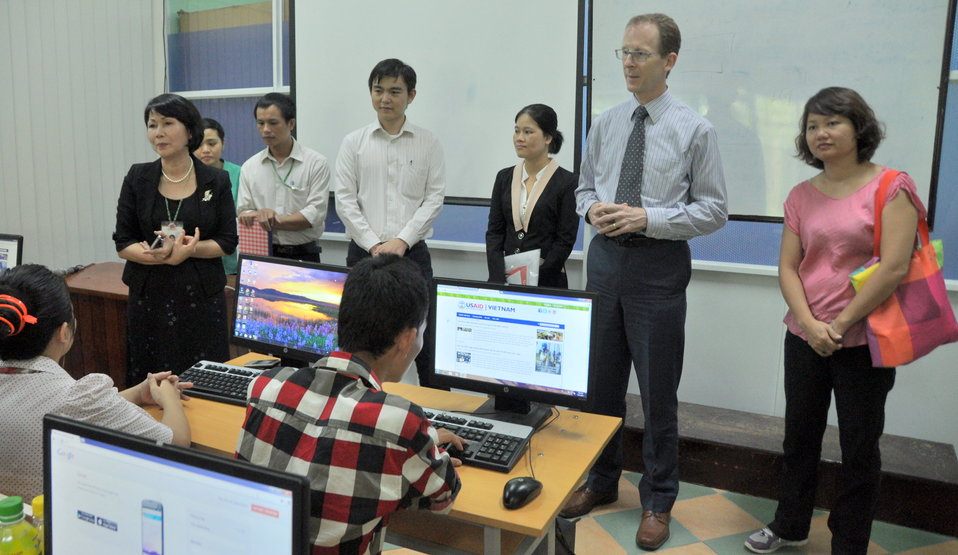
USAID Visits IT Training Program for People with Disabilities at Dong A University

Danang, Vietnam
July 17, 2013